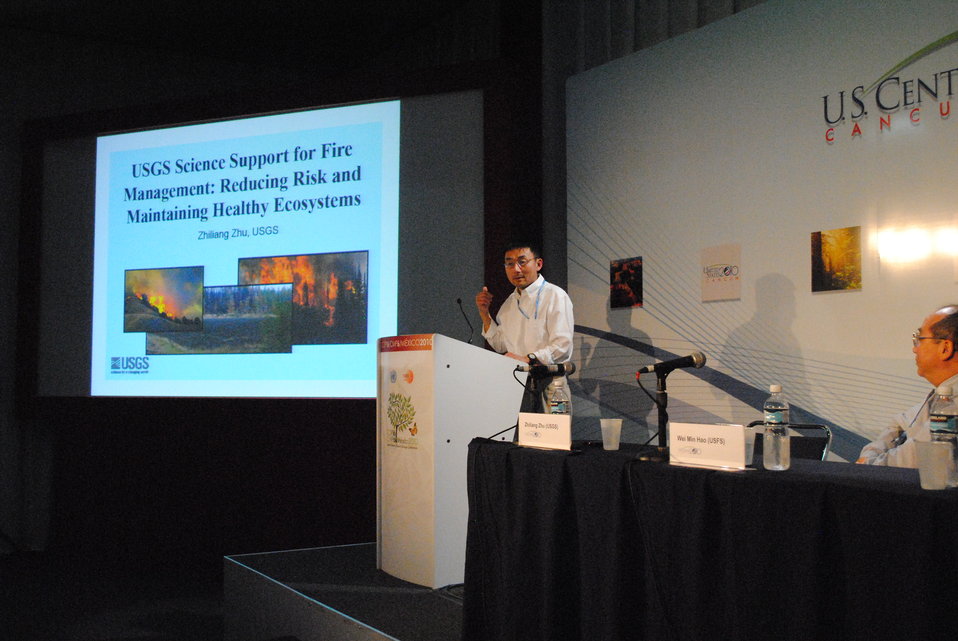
Zhiliang Zhu of USGS Explains the Impact of Fires

Zhiliang Zhu of the U.S. Geological Survey explains the impact of fires at a side event at the U.S. Center at COP-16 in Cancun, Mexico, on December 2, 2010.